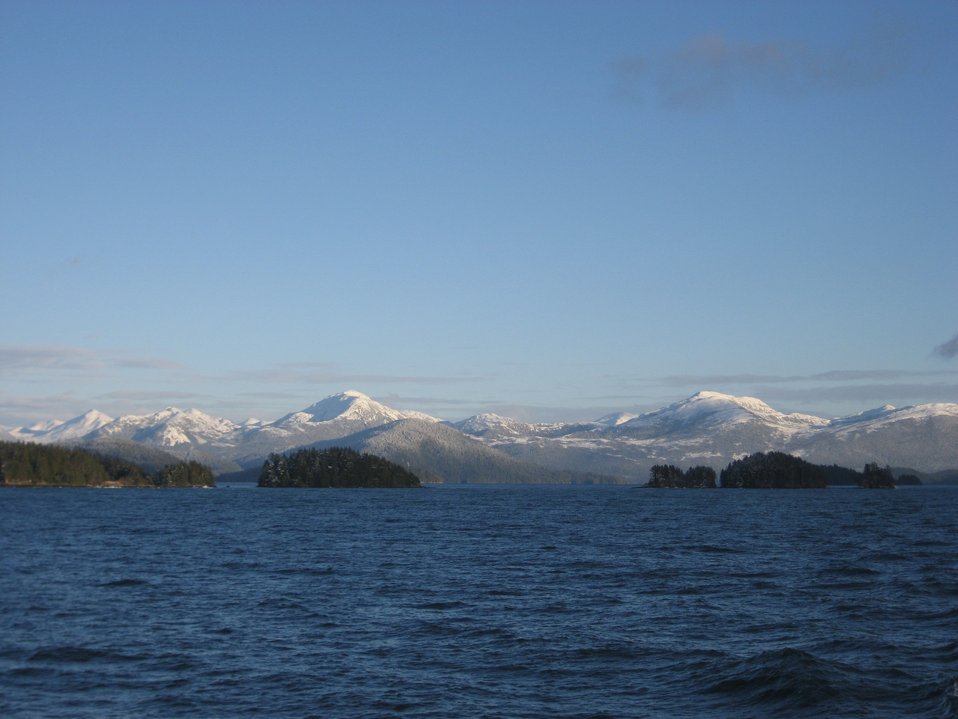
Mountains, islets, and snow along the Inside Passage.